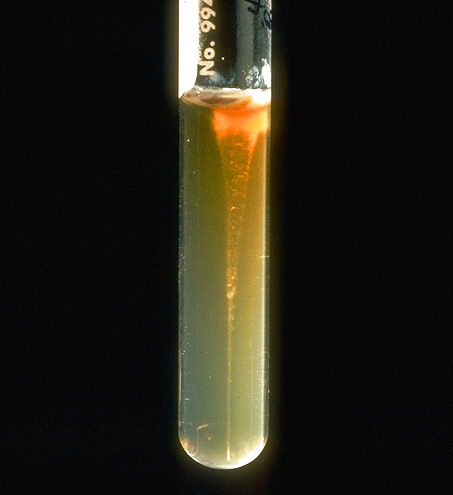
Stab culture of Legionella pneumophila.